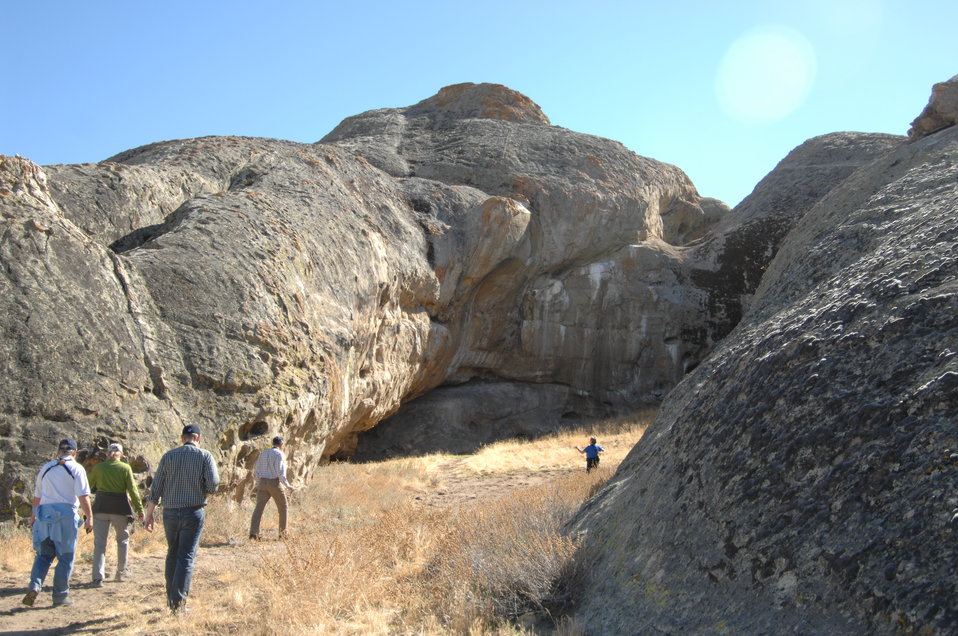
Painted Rock, Carrizo Plain 2